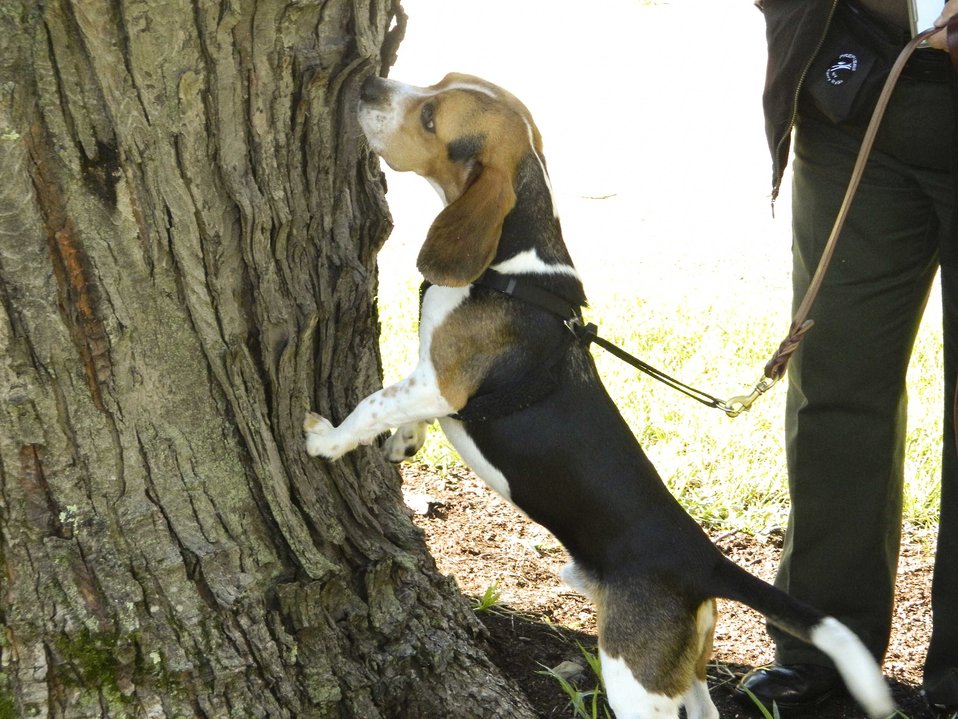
U.S. Department of Agriculture (USDA) Asian Longhorned Beetle (ALB) Detector Dog Thunder participates in a feasibility study to detect the presence of the invasive beetle in Worcester, MA on Aug. 1, 2012. The ALB is an invasive insect that is killing trees in Massachusetts, New York, New Jersey and Ohio. Four dogs are currently being trained to recognize beetle “frass” or excrement that the beetle leaves behind. This study is part of an important mission to protect neighborhood trees and this country’s valuable forest resources from this harmful pest.